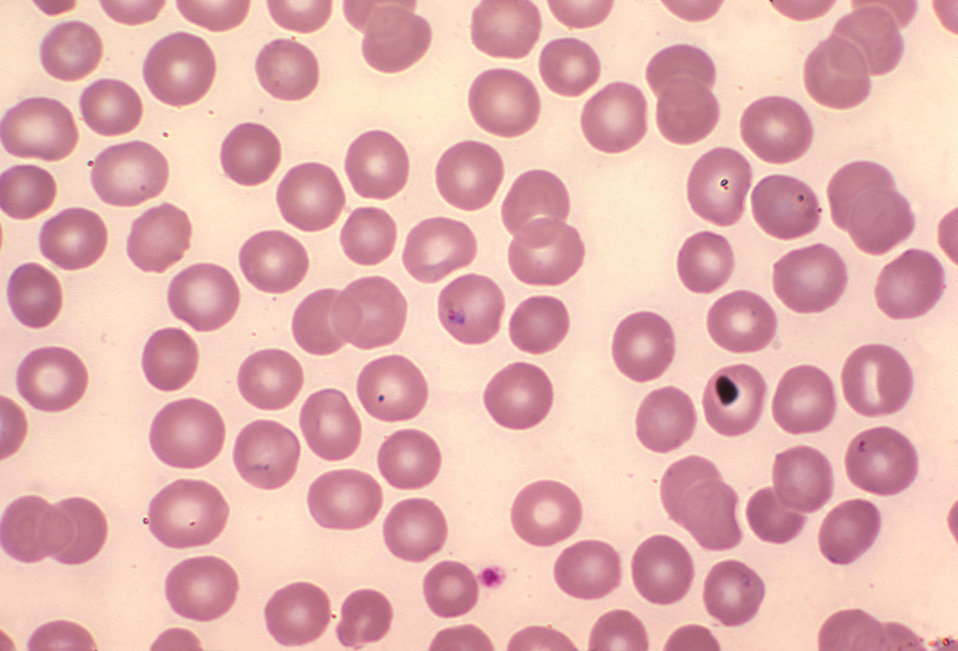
Babesia microti in blood smear. Giemsa stain. Parasite.